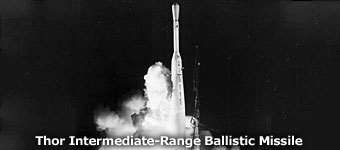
Thor intermediate-range ballistic missile, history spotlight graphic